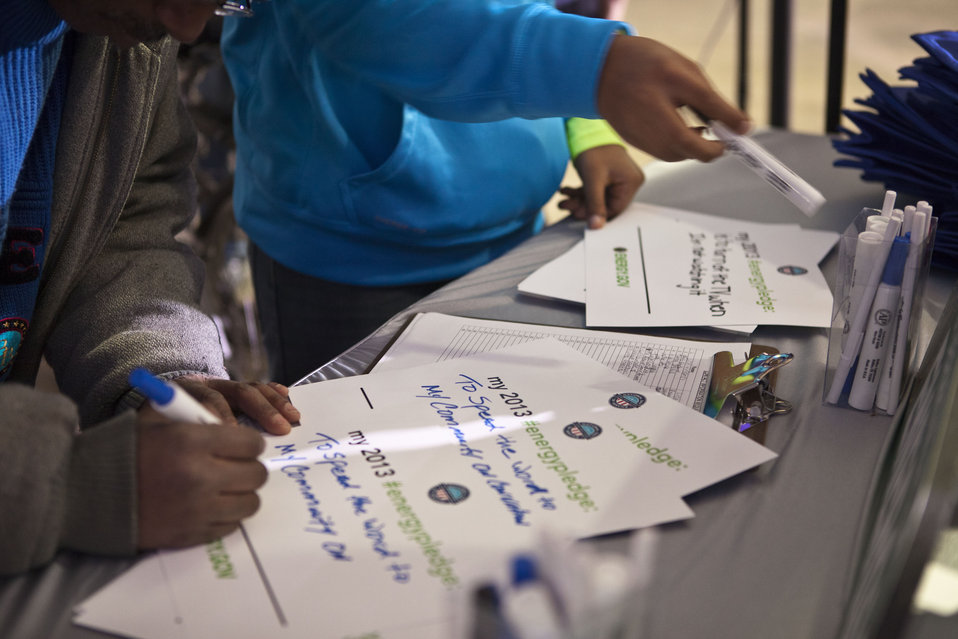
What's your #energypledge?